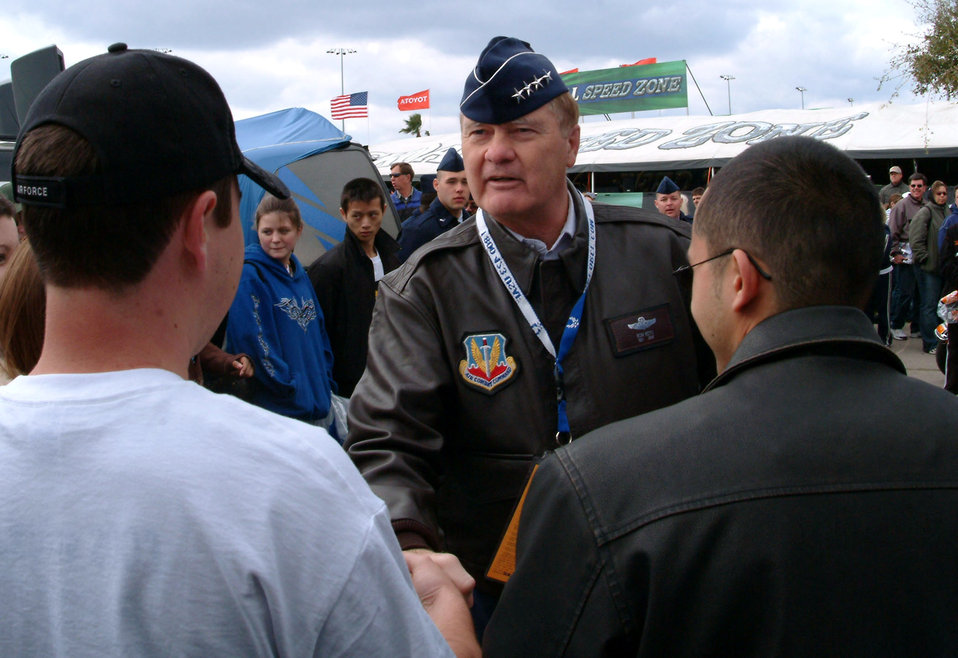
General swears in new Airmen at Daytona 500 race

Gen. Ronald Keys, Air Combat Command commander, shakes hands with the newly sworn-in Airmen Feb. 18 before the Daytona 500 race. General Keys gave the oath of enlistment to 36 delayed-entry-program recruits from the local area. Afterward, the new Airmen and the general were treated to a tour of the garage and pit areas before the race. The Air Force is one of the sponsors of the No. 21 Wood Brothers car driven by Ken Schrader.